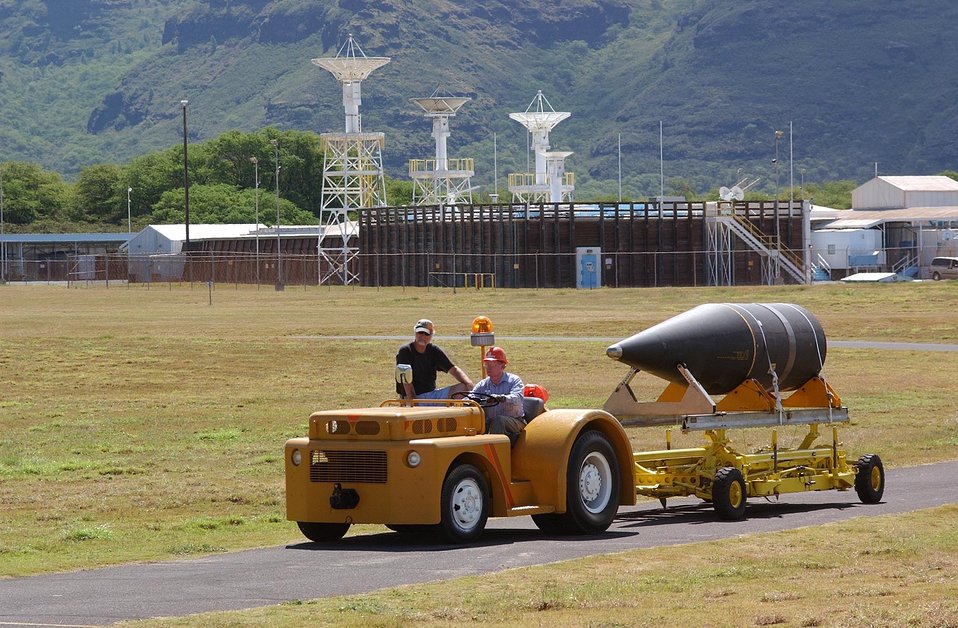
THE FM-5 TARGET VEHICLE BEING TOWED TO PAD 1 IN PREPARATION FOR LIFT-OFF.

FM-5 IS A MISSILE DEFENSE ROCKET BEING PREPARED FOR LAUNCH. SANDIA'S KAUAI TEST FACILITY, OPERATED FOR DOE, IS ON THE U.S. NAVY'S PACIFIC MISSILE RANGE FACILITY ON THE ISLAND OF KAUAI, HAWAII. SANDIA SCIENTISTS AND TECHNICIANS AT KTF, CONDUCT ROCKET FLIGHT TEST EXPERIMENTS RANGING FROM OFFENSIVE AND DEFENSIVE WEAPONS TESTING TO ATMOSPHERIC STUDIES AND HIGH TECH STAR GAZING.